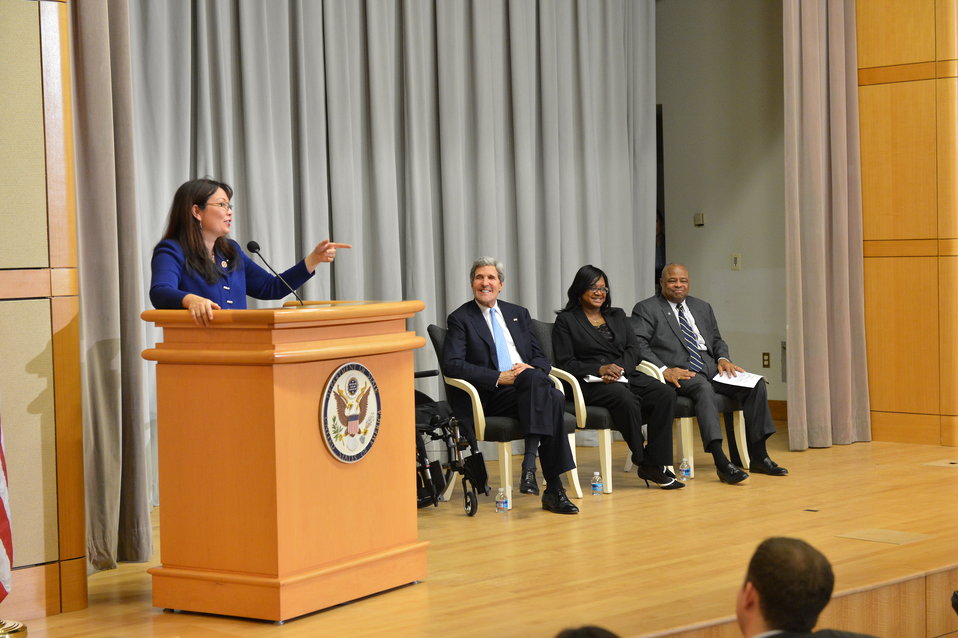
Congresswoman and Decorated Iraq Veteran Duckworth Delivers Remarks

U.S. Secretary of State John Kerry listens as U.S. Representative and decorated Iraq veteran Tammy Duckworth of Illinois delivers remarks at an event hosted by the Office of Civil Rights to commemorate Veterans Day at the U.S. Department of State on November 13, 2013.